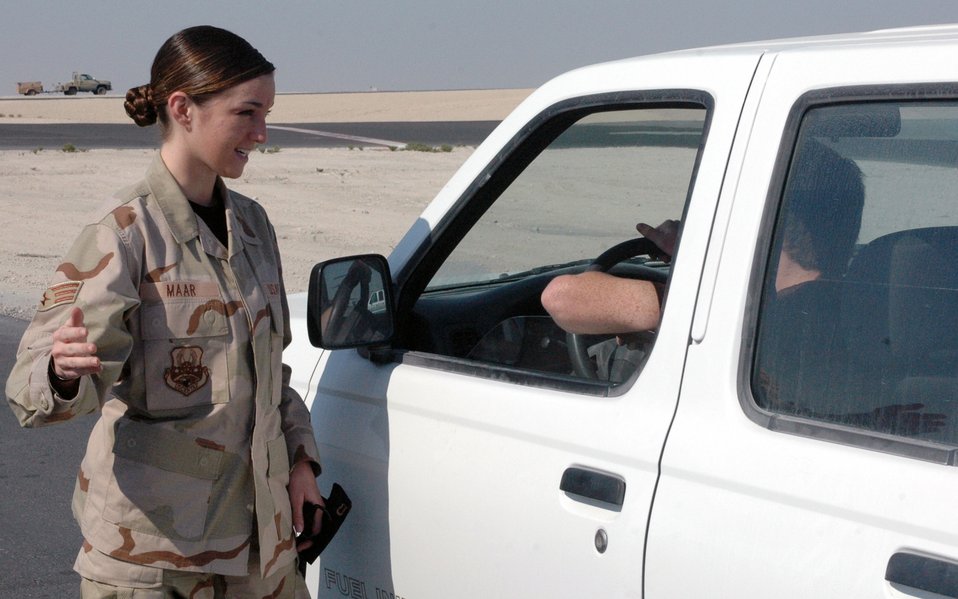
379th Airfield Management keeps aircraft, personnel safe

Senior Airman Shannon Maar stops an individual and instructs him on the proper way to complete a rollover tire FOD check. FOD checks must be completed each time a vehicle enters the airfield at an entry control point or from an unpaved surface. Airman Maar is an airfield management operations supervisor assigned to the 379th Expeditionary Operations Support Squadron and deployed from Davis-Monthan Air Force base, Ariz.